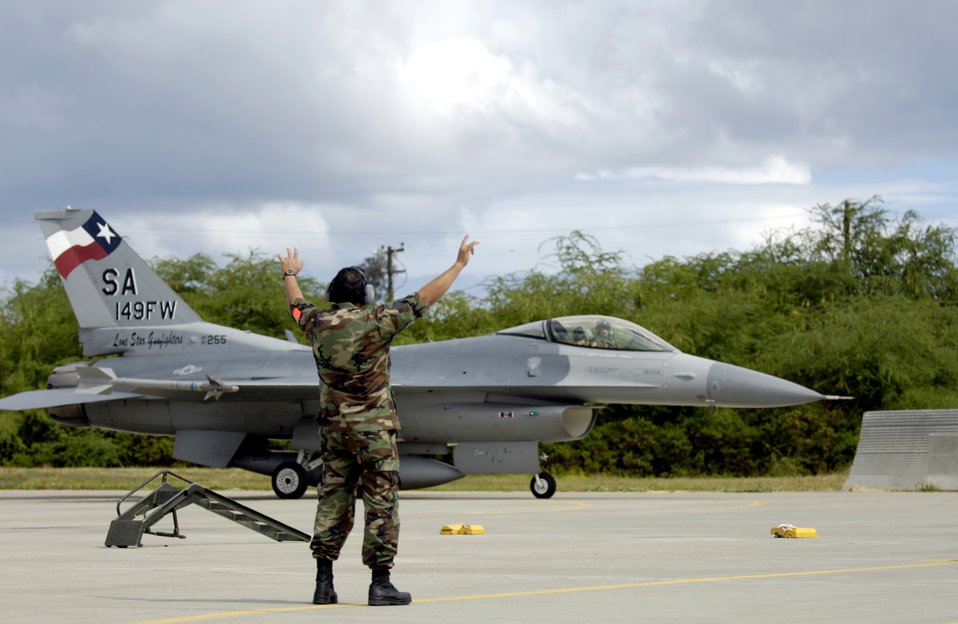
Sentry Aloha

Master Sgt. Roy Rae marshals an F-16 Fighting Falcon to its parking spot at Hickam Air Force Base, Hawaii, Sept. 6. Six F-16s and crews from the Texas Air National Guard's 149th Fighter Wing are participating in Exercise Sentry Aloha. The exercise brings dissimilar combat assets to Hickam to train with the Hawaii Air National Guard's 199th Fighter Squadron.